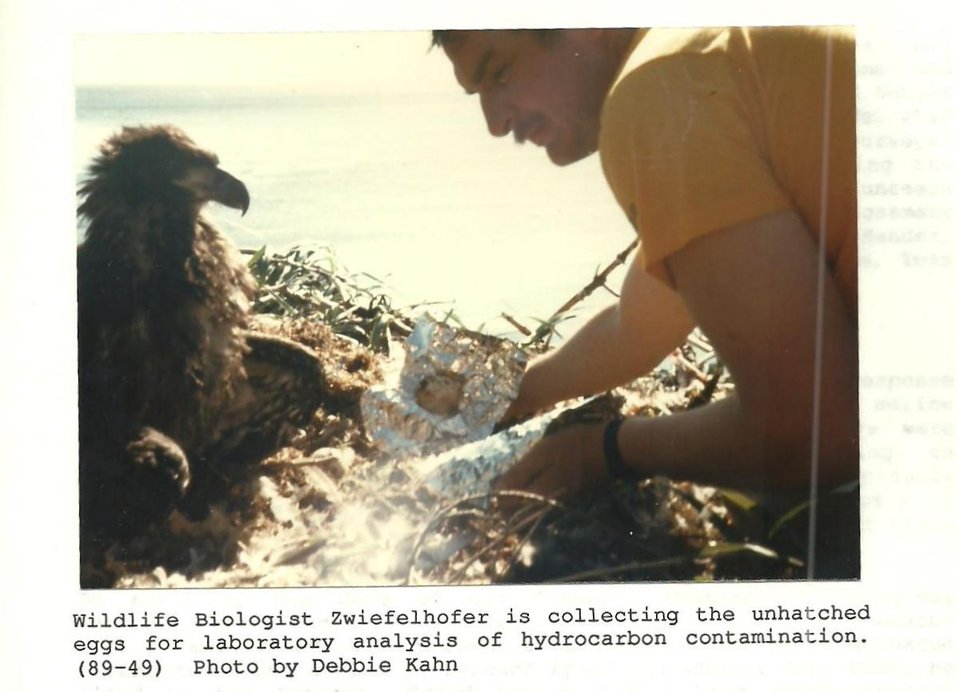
(1989) Close Encounters With Eagles

Credit: USFWS

Source and Contact: Kodiak National Wildlife Refuge